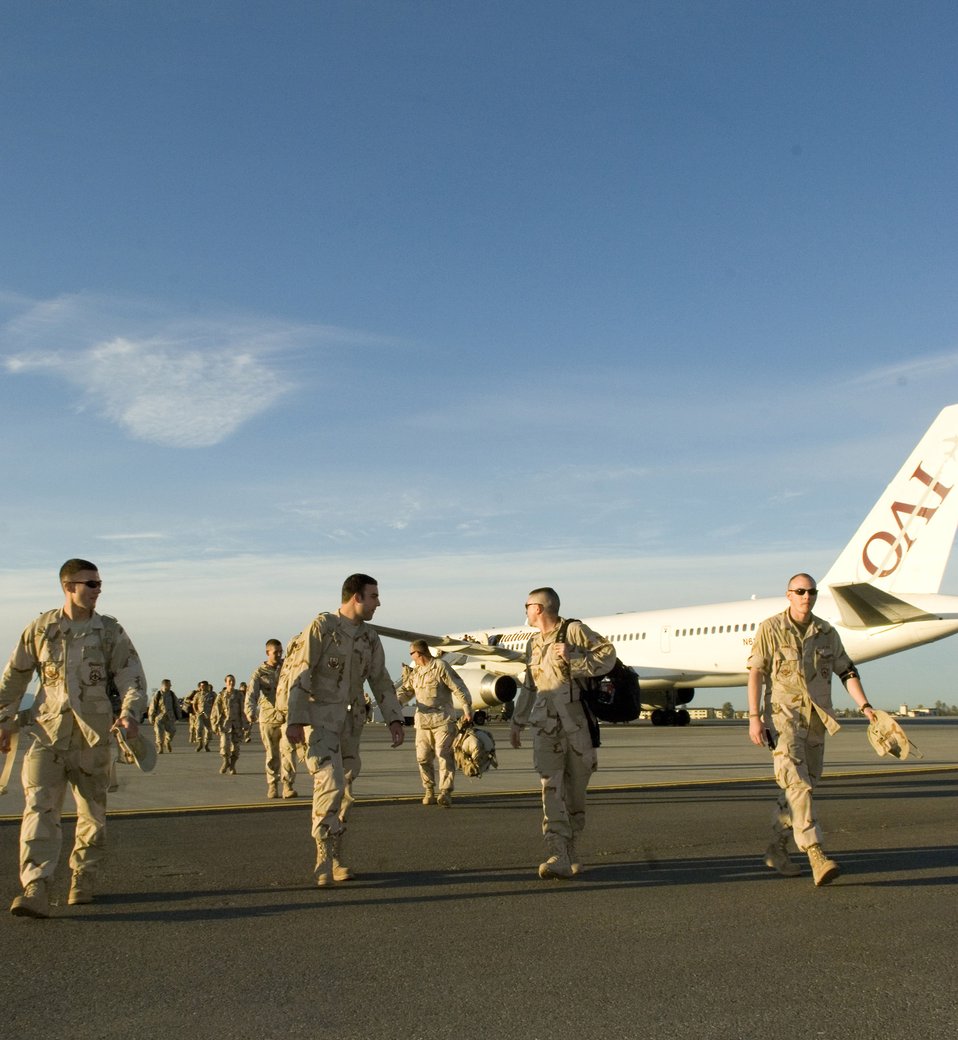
Affectionate homecoming

Approximately 40 Airmen disembark from a commercial aircraft Sept. 17 as they return to Elmendorf Air Force Base, Alaska, after being deployed in Southwest Asia supporting the war on terrrorism. The Airmen returned to friends and families awaiting their arrival at the joint military complex.